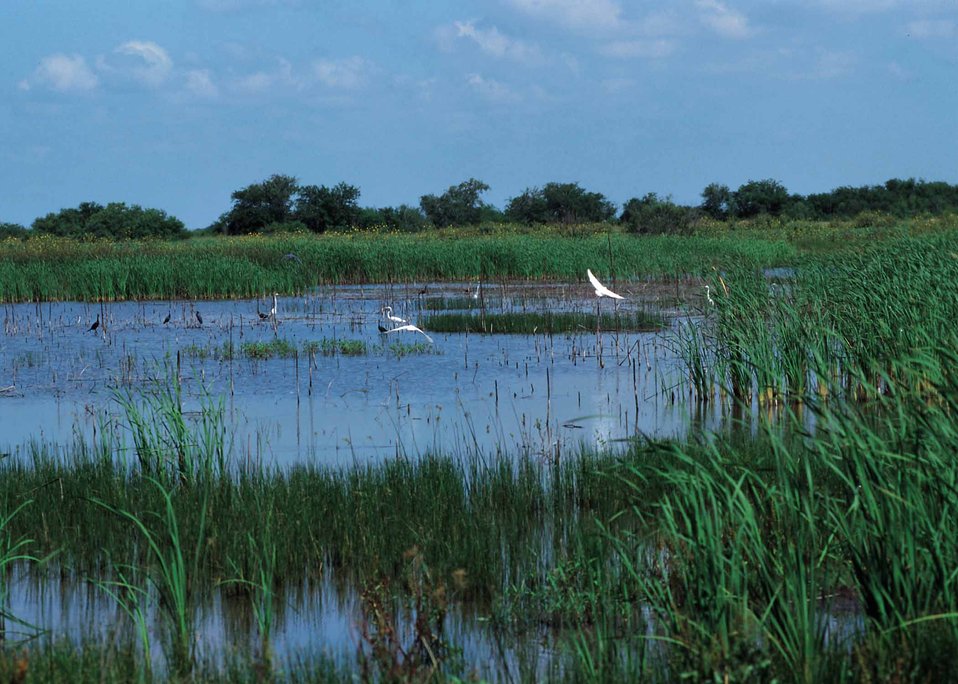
Restored wetland in Iowa.